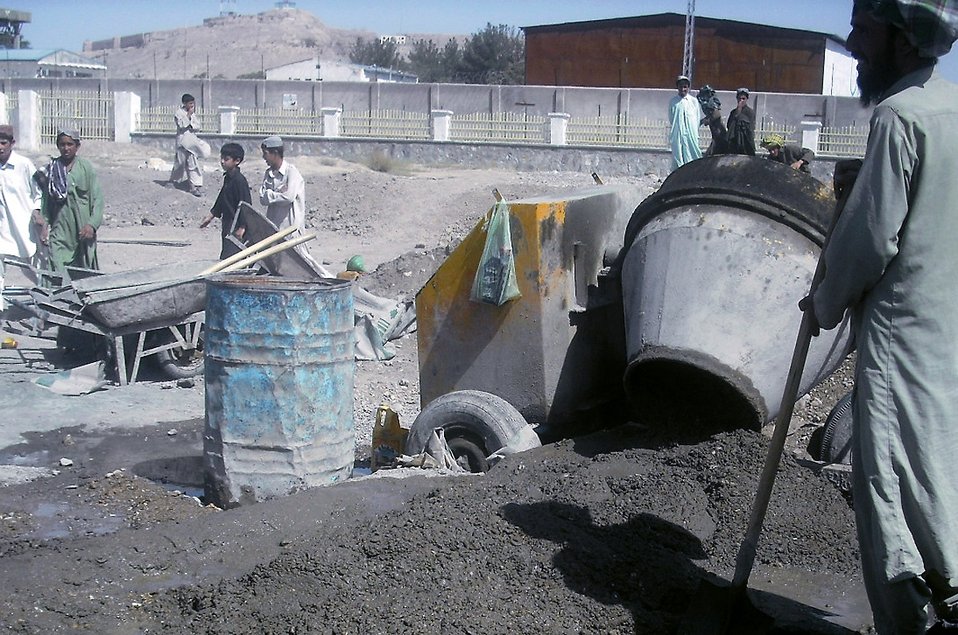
Servicemembers strive to brighten future for Afghan youths

Local contractors mix cement at the Qalat boy's middle and high school campus for the construction of a soccer stadium as students look on Aug. 23 at Qalat, Afghanistan. Members of the Zabul Provincial Reconstruction Team facilitated the installation of a well, electrical upgrade and provided a month of food subsidies for students. Other construction on the grounds includes adding a sewage system to the school complex.